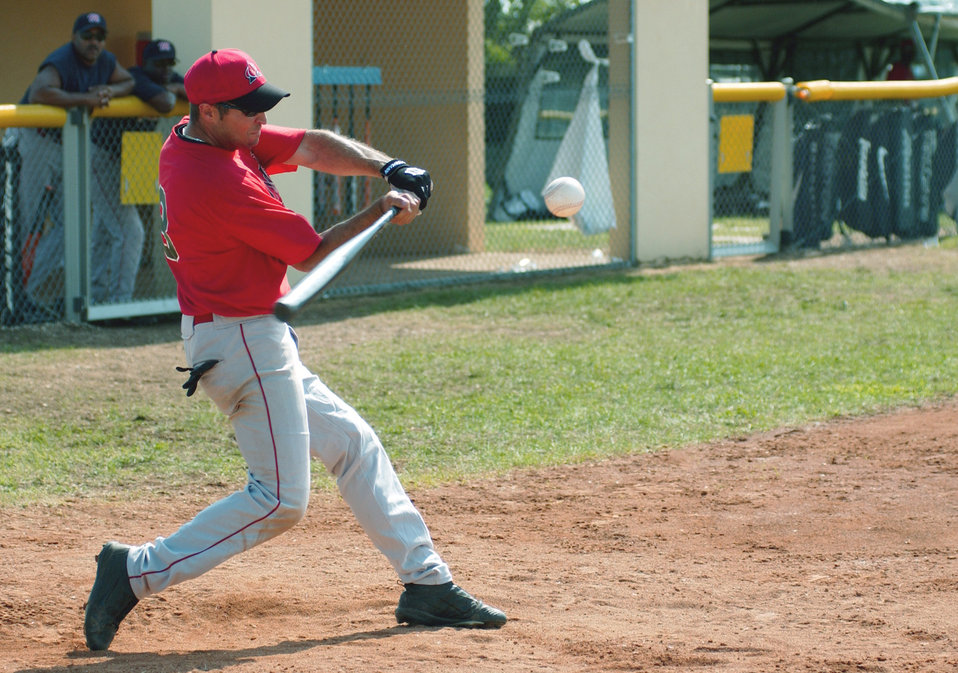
Batter up

AVIANO AIR BASE, Italy -- Staff Sgt. Chris Iannotti takes a swing at the ball during the 2004 U.S. Air Forces in Europe softball championship games here Sept. 1. Sergeant Iannotti is assigned to the 31st Communications Squadron here. The Aviano Dragons softball team placed second overall in the tournament.